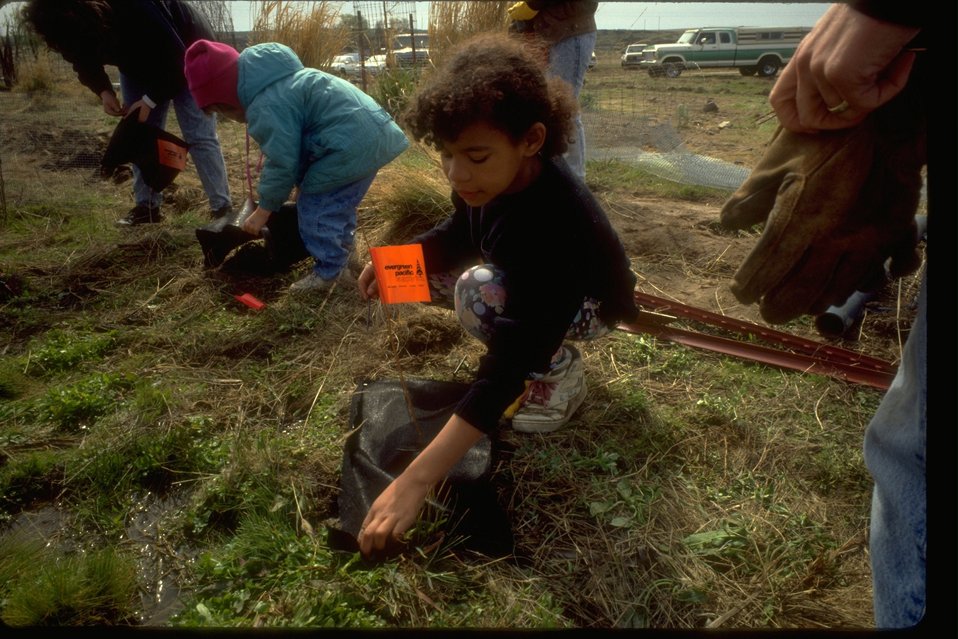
Children participate in habitat improvement project at Lakeview Ranch Lincoln County, Washington.